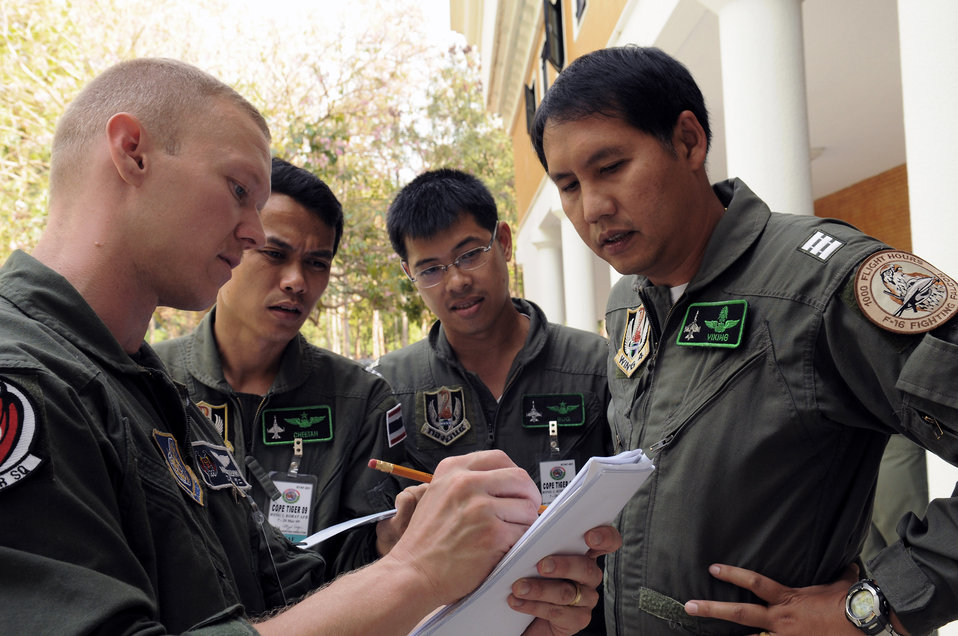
Multinational exercise Cope Tiger 2009 kicks off

Capt. Mike Kuehni discusses flight operations with Royal Thai Air Force Squadron Leader S. Sak, Wing Commander N.Don, and Wing Commander Nm. Rat at Korat Royal Thai Air Force Base, Thailand, March 9. Cope Tiger is an annual, multilateral large force aerial exercise conducted in Thailand including U.S., Thai and Singaporean military forces. The two-week exercise includes both flying and humanitarian missions conducted in Korat and Udon Thani, Thailand. Cope Tiger 2009 kicked off March 9 and will conclude March 20. Captain Kuehni is deployed to Cope Tiger 2009 from the 44th Fighter Squadron at Kadena Air Base, Japan.